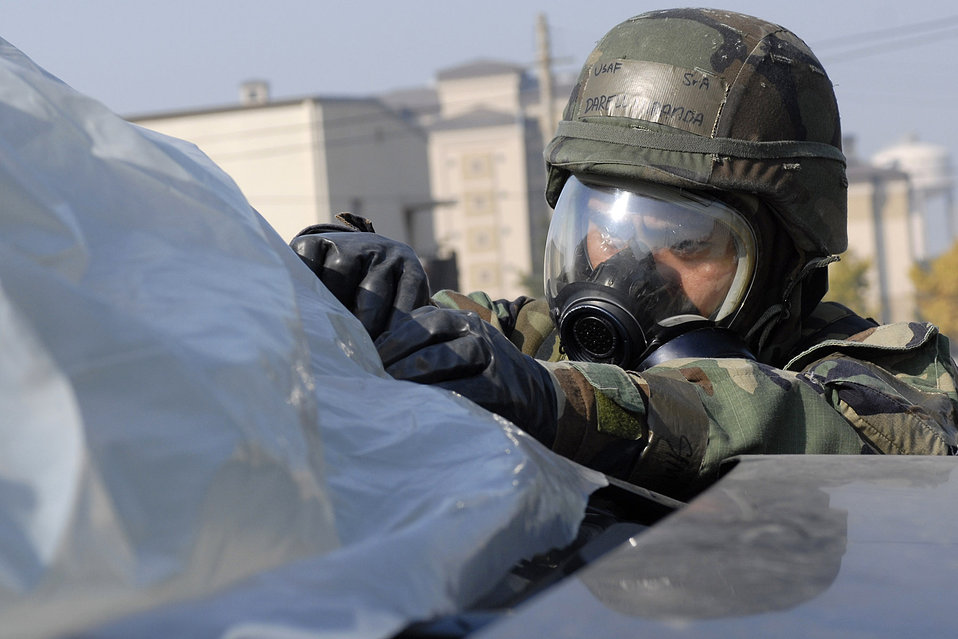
Testing readiness at Kunsan

Senior Airman Darrell Miranda covers up a vehicle with plastic wrapping to avoid contamination during the Peninsula Operational Readiness Exercise Nov. 8 at Kunsan Air Base, South Korea. The exercise was conducted to ensure base members remain ready to execute its mission. Airman Miranda is assigned to the 8th Civil Engineer Squadron.